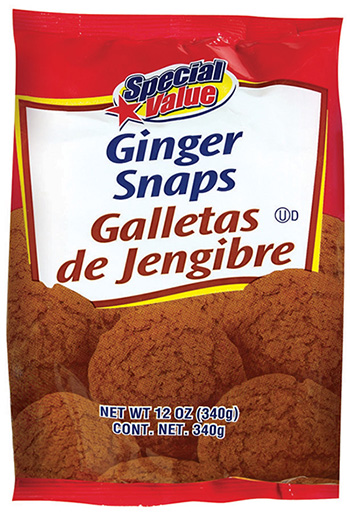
RECALLED – Ginger Snaps Cookies

January 31, 2014 – Product Recall – Unified Grocers, Inc. Issues Allergy Alert on Undeclared Eggs in “Special Value Ginger Snap Cookies”.